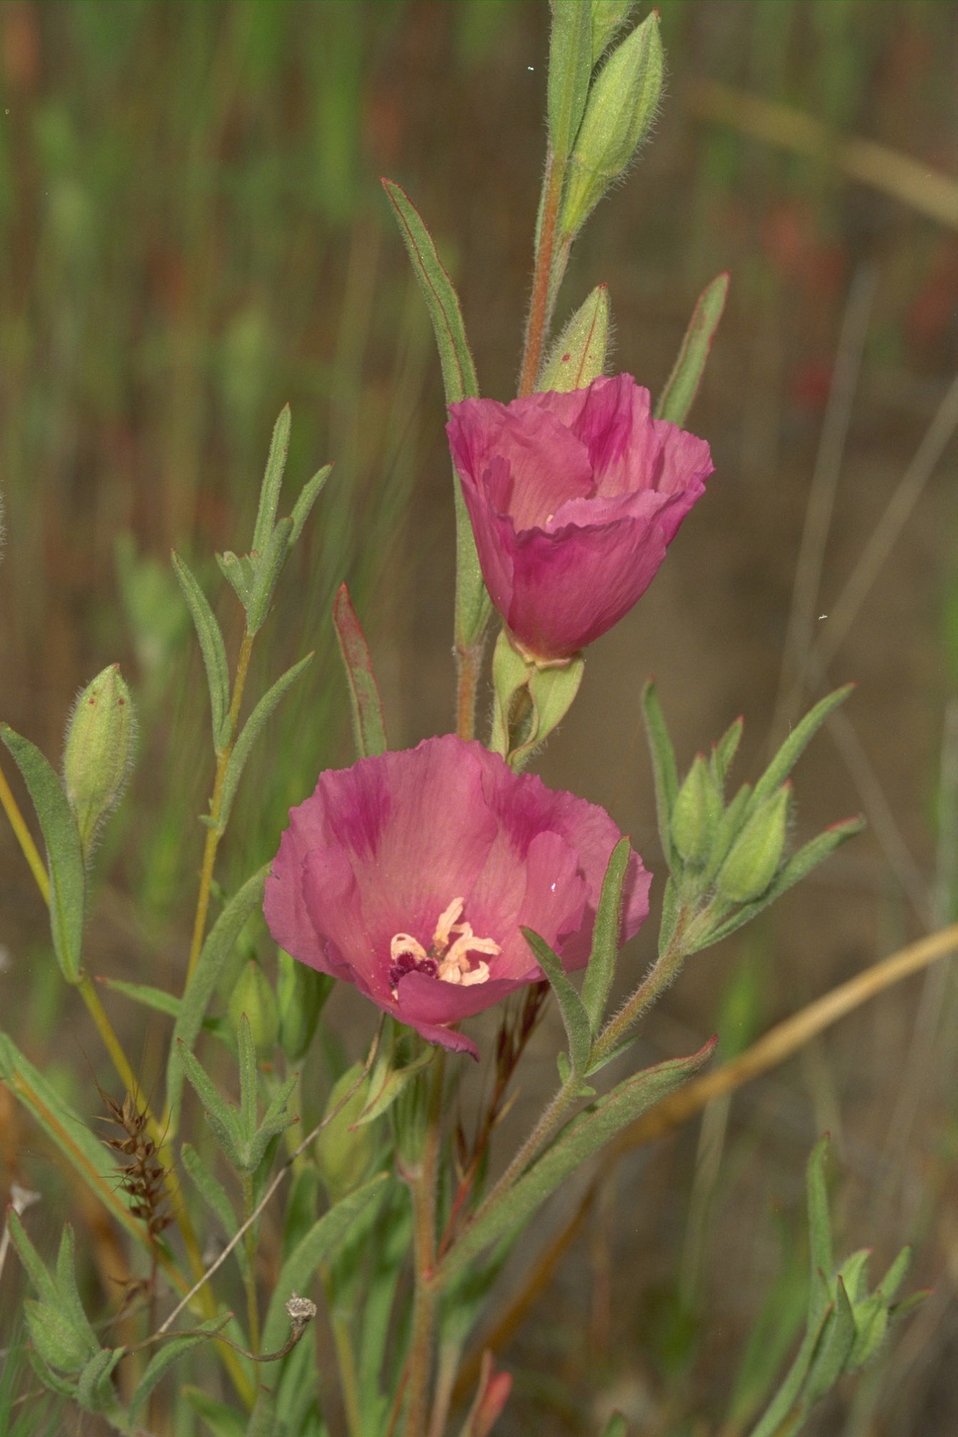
Farewell-to-Spring (Clarkia amoena) at Upper Table Rock.